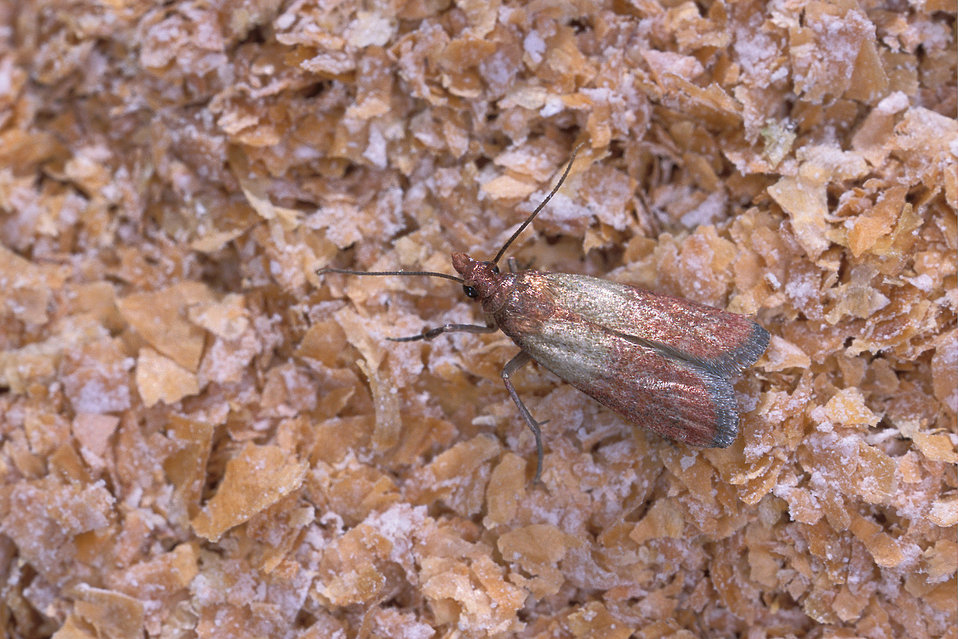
An adult Indianmeal moth crawls on top of cereal chips. Indianmeal moths are a common grain-feeding pest found around the world, feeding on cereals and similar products.